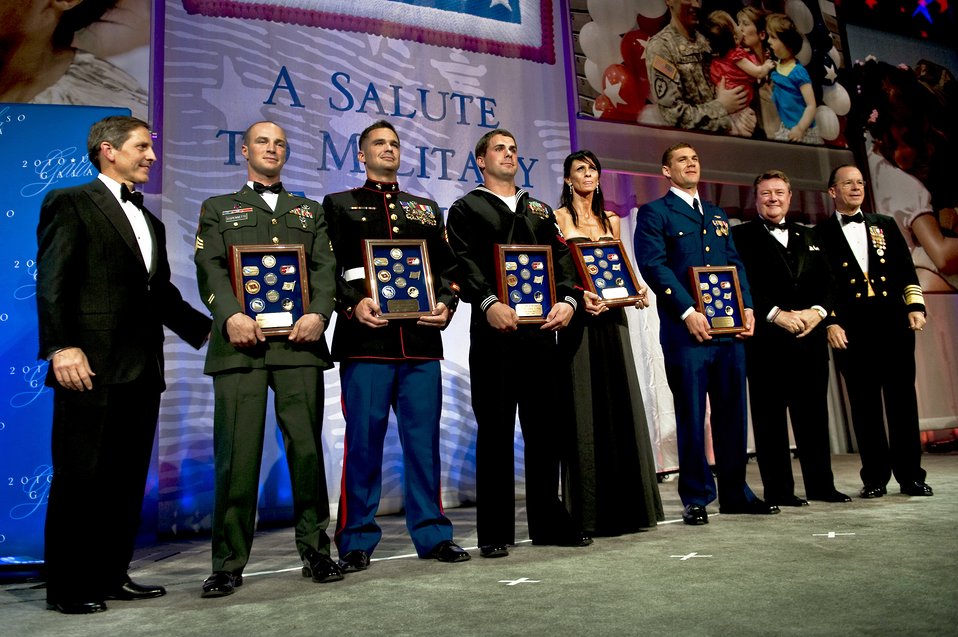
USO Gala honors servicemembers, families

(From left to right) USO President Sloan Gibson; Army Sgt. Zachary C. Dispennette; Marine Corps Sgt. Eric B. Walker; Navy Petty Officer 2nd Class Kenton J. Stacy; Kimberly Watkins, mother of award recipient Staff Sgt. Gino P. Kahaunaele; Coast Guard Petty Officer 3rd Class Robert D. Emley; Edward T. Reilly, president of the USO board of governors; and Navy Adm. Mike Mullen, chairman of the Joint Chiefs of Staff, pose for photos at the USO Gala Oct. 7, 2010, in Washington, D.C..